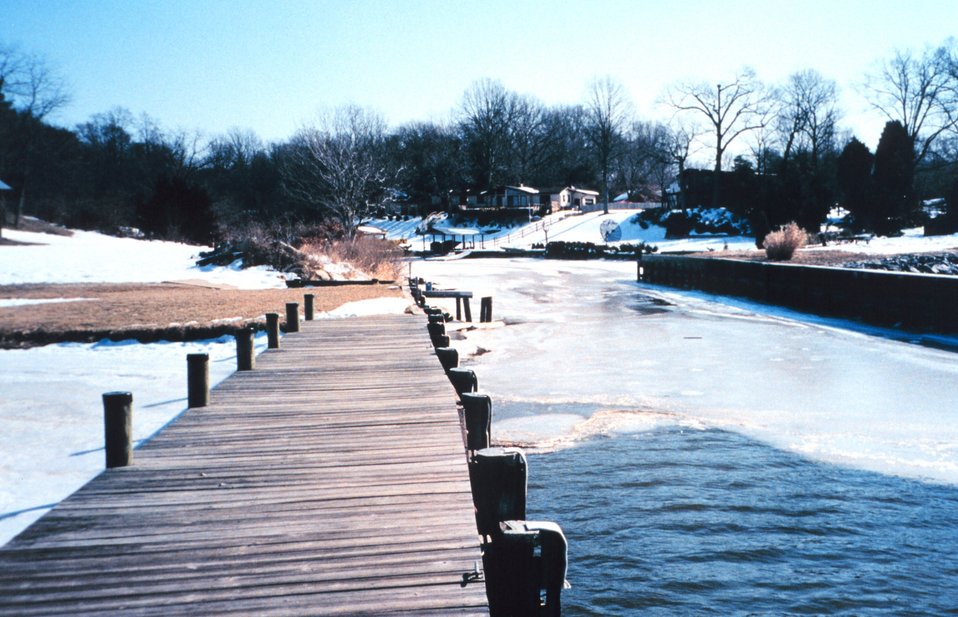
Snow and ice along the Patuxent River.